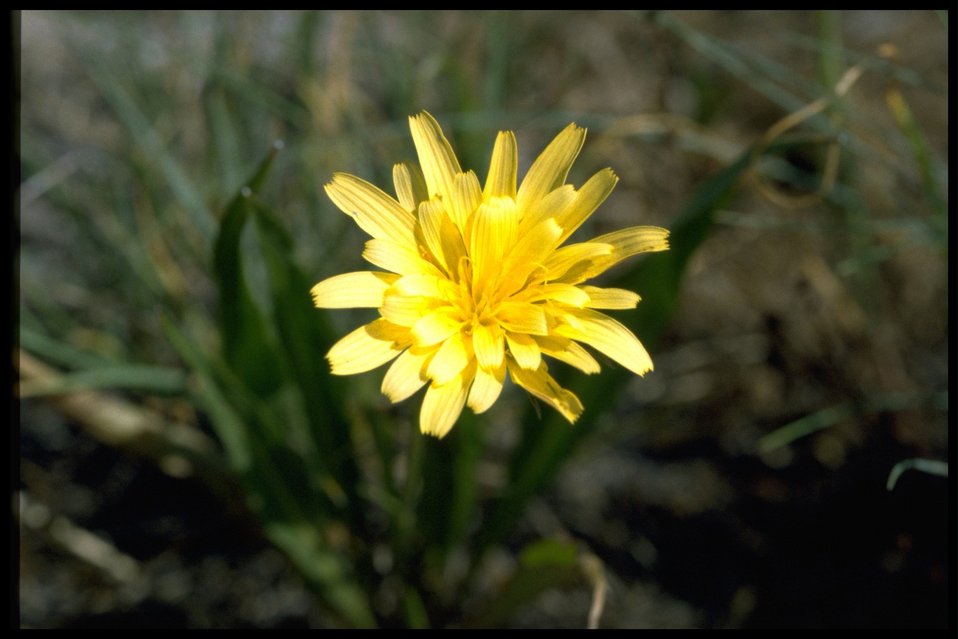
Closeup shot of False Agoseris wildflower.